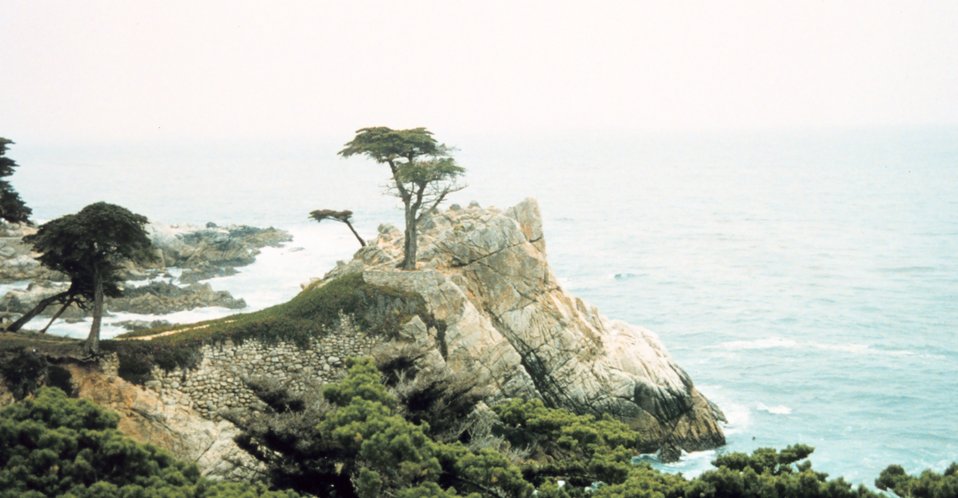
Cypress Point - a world famous landmark on 17 Mile Drive.